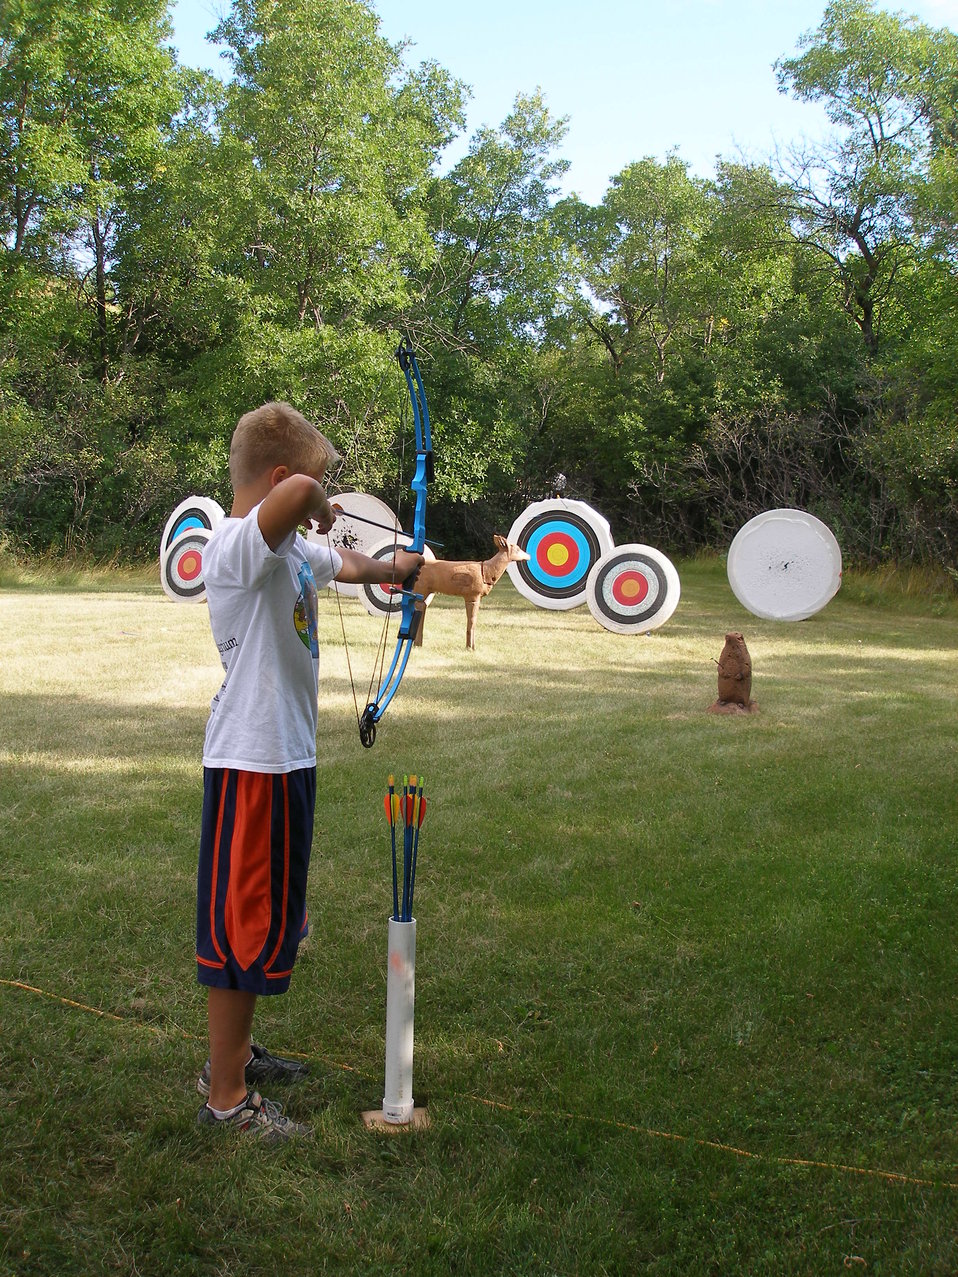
2011 Greenwing Day - Archery Session

Des Lacs National Wildlife Refuge, Tasker's Coulee

Participants had the opportunity to 'aim' at 3D targets